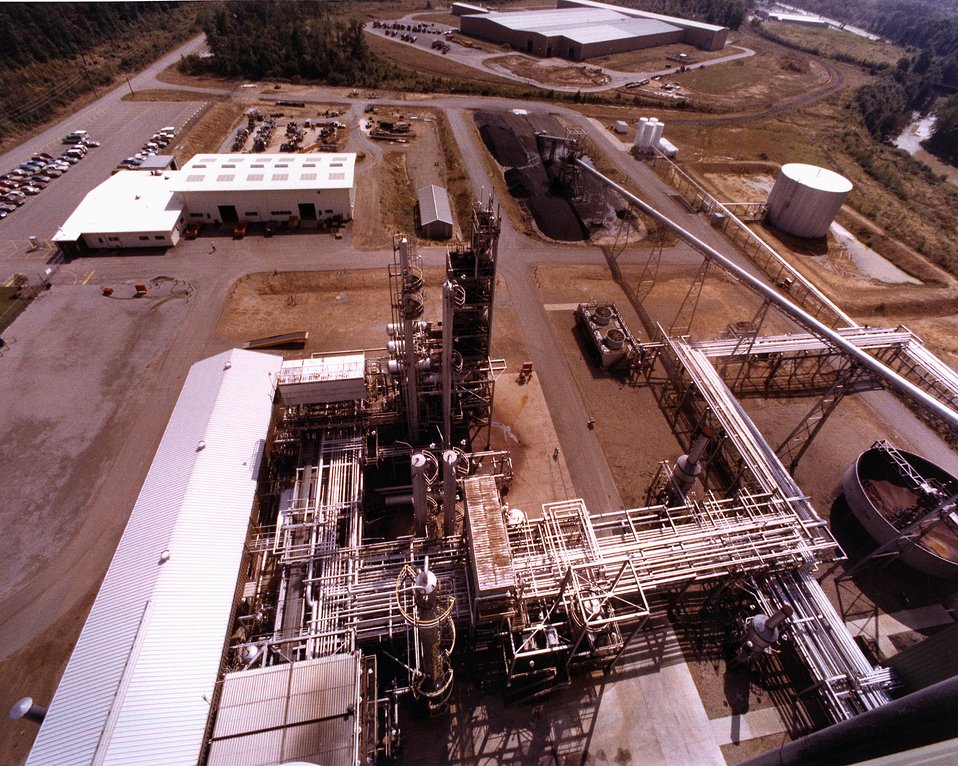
VIEW OF THE PILOT PLANT FROM THE GASIFIER TOWER.

THE BIGAS PILOT PLANT HAS A TWO-STAGE, ENTRAINED-BED GAS- IFIER. IN THIS GASIFIER, PULVERIZED COAL IS CONVERTED TO METHANE-RICH GAS BY REACTING THE COAL WITH STEAM AND OXYGEN UNDER HIGH PRESSURE. THE METHANE-RICH GAS IS PROCESSED TO REMOVE THE HYDROGEN SULFIDE AND CARBON DIOXIDE WHICH LEAVES THE HIGH BTU GAS. THE BIGAS REACTOR CAN HANDLE ALL TYPES OF COAL. DUE TO THE HIGH OPERATING TEMPERATURE OF OVER 2500 DEGREES F., THERE IS NO TAR IN THE PRODUCT GAS, THUS SIMPLIFYING THE GAS CLEANUP STEP. HIGH METHANE YIELDS ARE ACHIEVED WITHOUT METHANATION, AND COALS CAN BE GASIFIED WITHOUT PRIOR TREATMENT BECAUSE THE PROCESS USES AN ENTRAINED-BED RATHER THAN A FIXED-BED OR FLUIDIZED-BED SYSTEM.